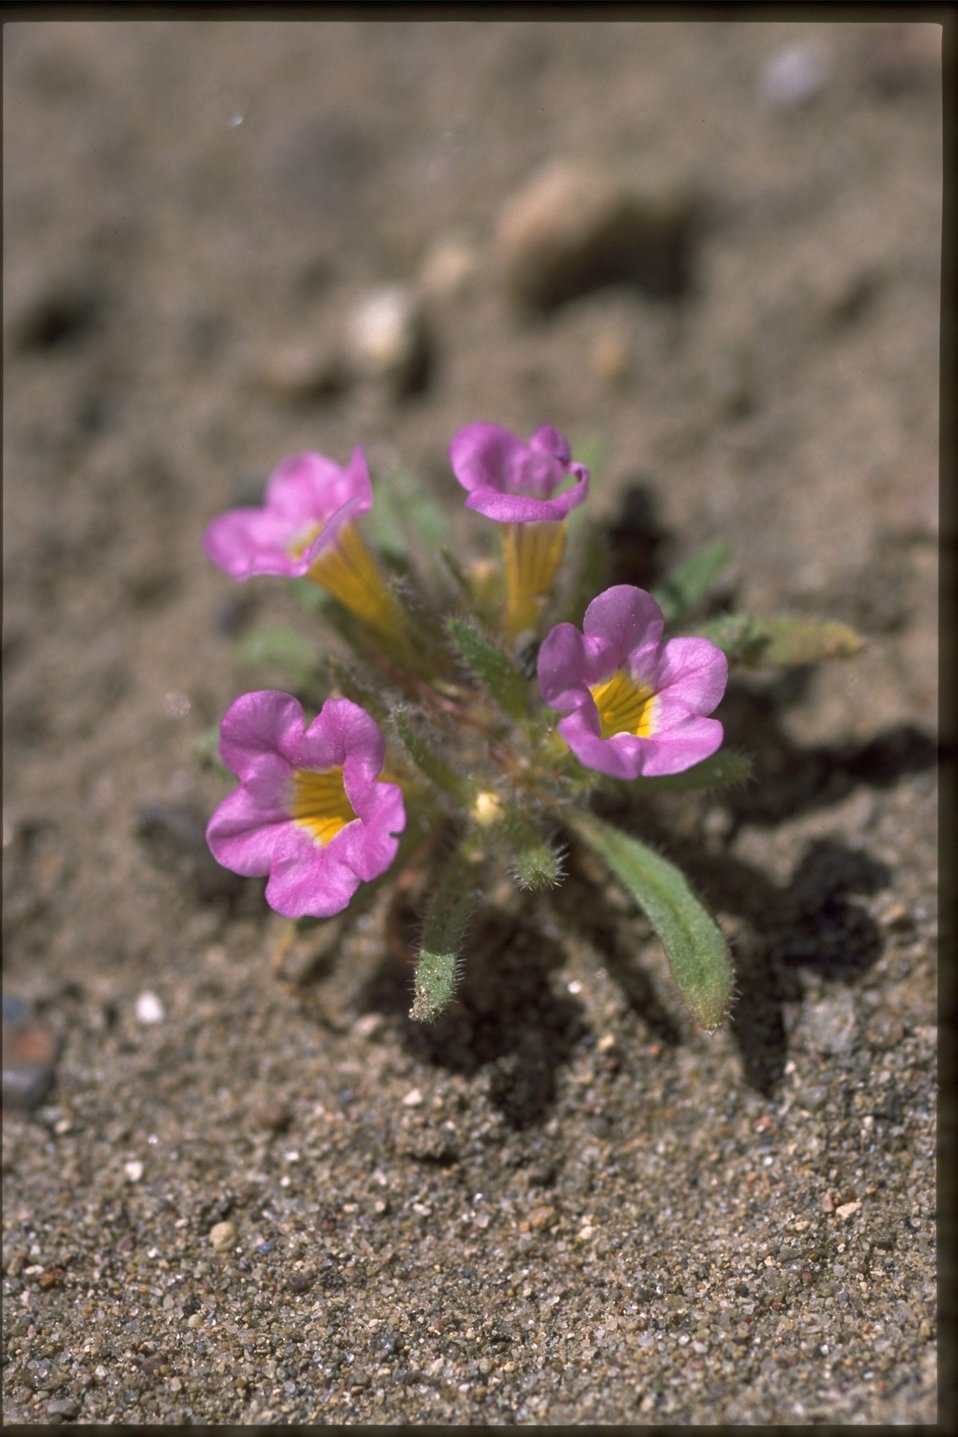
Medium shot of unidentified wildflowers.